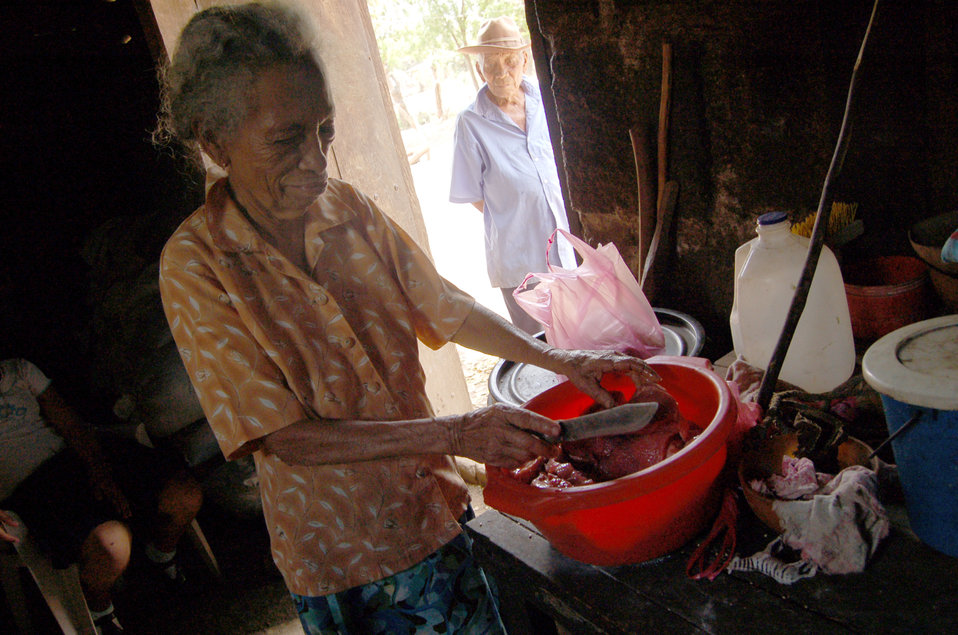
Nicaraguan lifestyle proves hard, offers valuable lessons

Luisa Palacio-Cortez slices beef on one of two tables in her two-room grey brick and wooden house as her husband, Selmo, watches through the doorway. The 83-year-old woman and her household of four survive off of about $11 to about $27 a month.